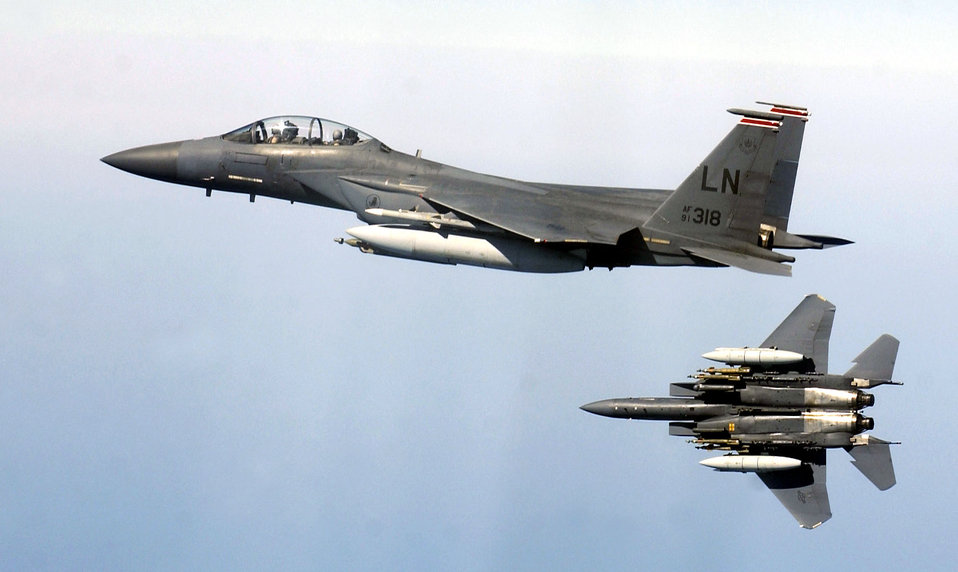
Hard bank

SOUTHWEST ASIA -- Two F-15E Strike Eagles from the 494th Expeditionary Fighter Squadron soar through the skies of Iraq during a combat air support mission. The 494th EFS deployed here from Royal Air Force Lakenheath, England, supporting Operation Iraqi Freedom.